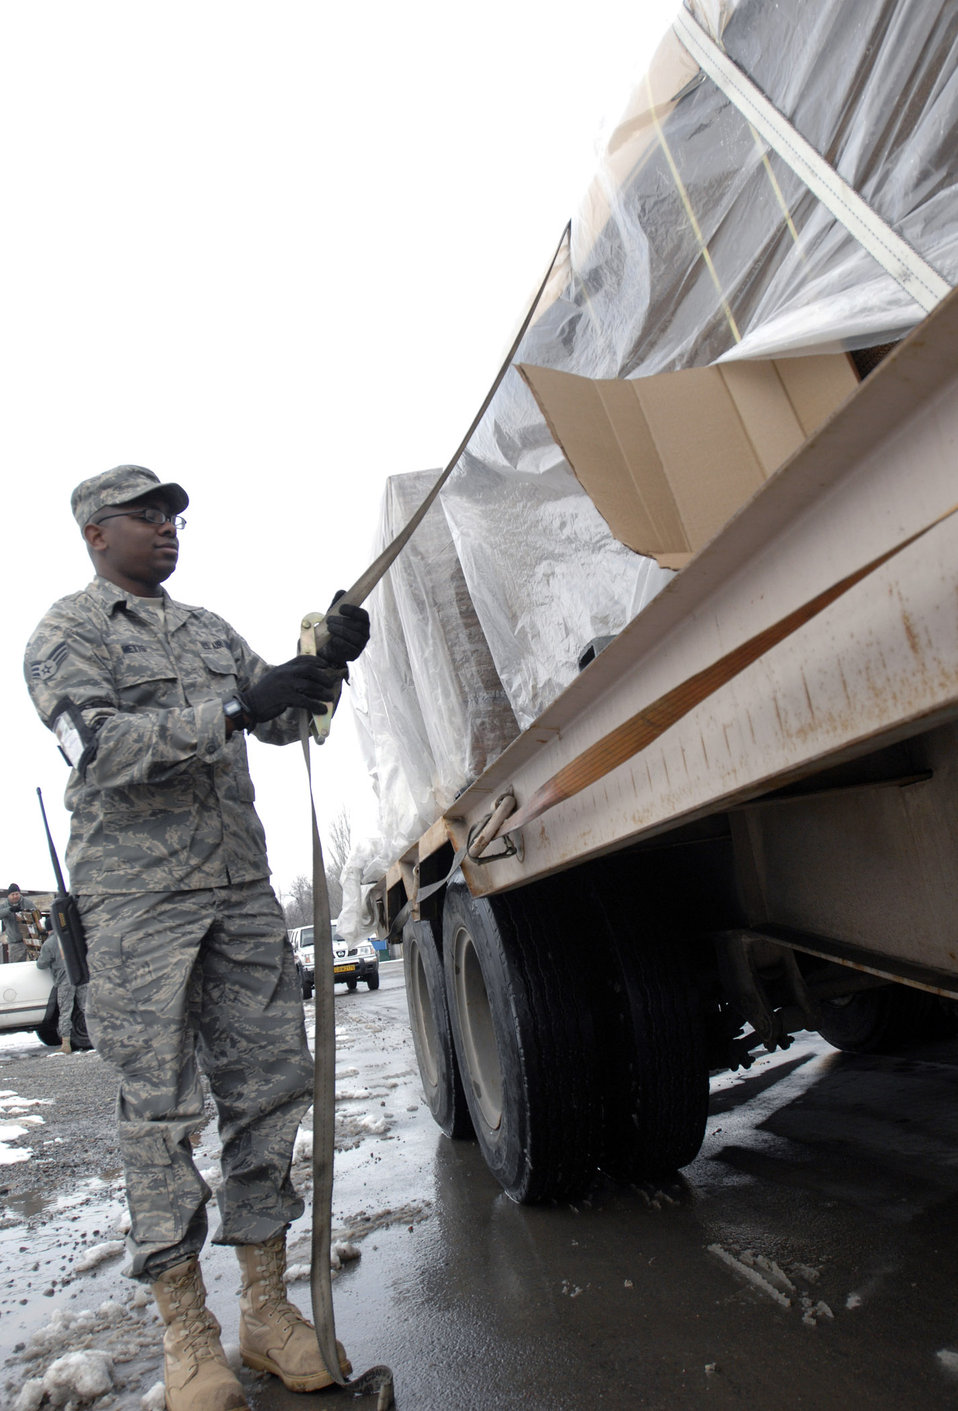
Manas members continue to support coalition operations

Airman 1st Class Timothy Metts loosens the straps off a pallet of triwall boxes Feb. 4 at Manas Air Base, Kyrgyzstan. The boxes will be used for shipping military equipment to and from Afghanistan. Manas AB serves as a mobility hub for operations in Afghanistan, providing daily refueling missions and supporting personnel and cargo transiting in and out of Afghanistan. Airman Metts is with the 376th Expeditionary Logistics Readiness Squadron and is deployed from Aviano Air Base, Italy.